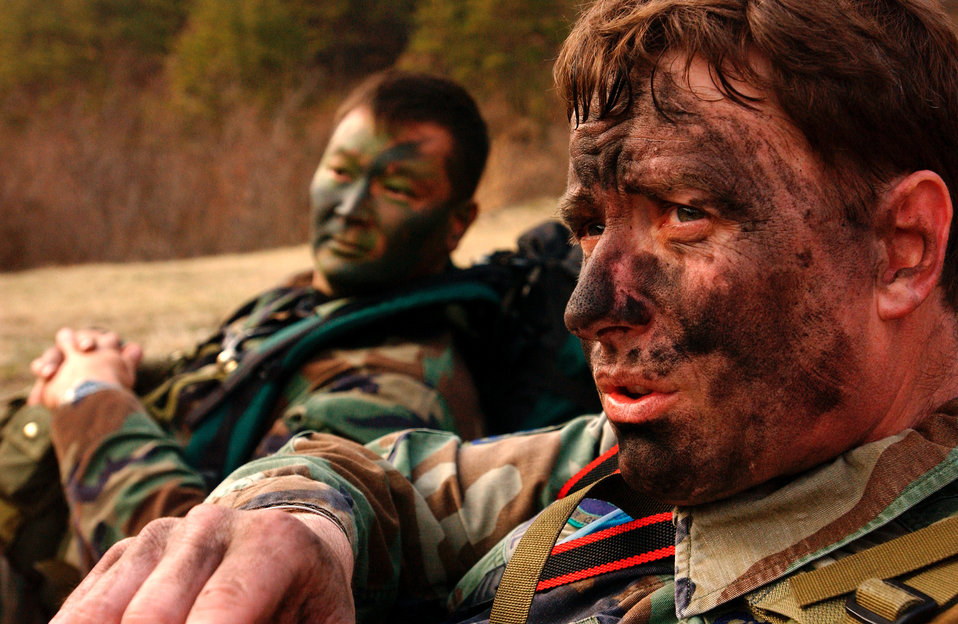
Master and student

OSAN AIR BASE, South Korea -- Master Sgt. Mark Kuntz takes a break during a survival, evasion, resistance and escape exercise here. As part of exercise Foal Eagle, Kuntz, a SERE instructor, is helping to train Korean air force members to navigate and guide Air Force rescue units to their location.